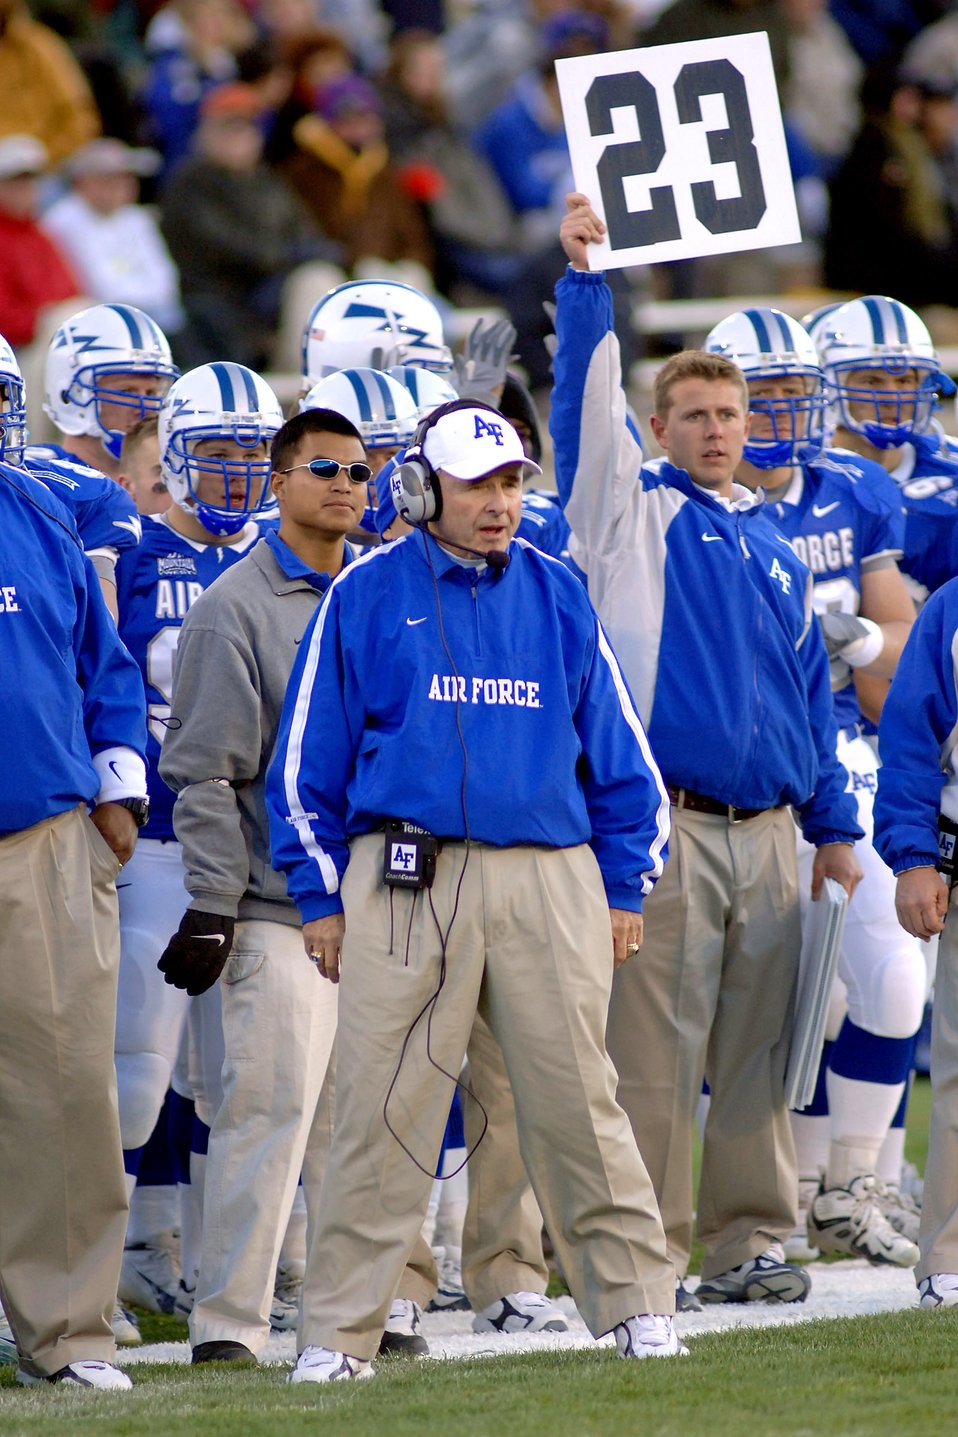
Falcons set to recapture Commander-in-Chief's Trophy

Junior quarterback Shaun Carney, 5, has proven to be one of the more successful passing quarterbacks in Air Force history. During the 2005 season he posted a completion rate of better than 60 percent and rushed for more than 700 yards.